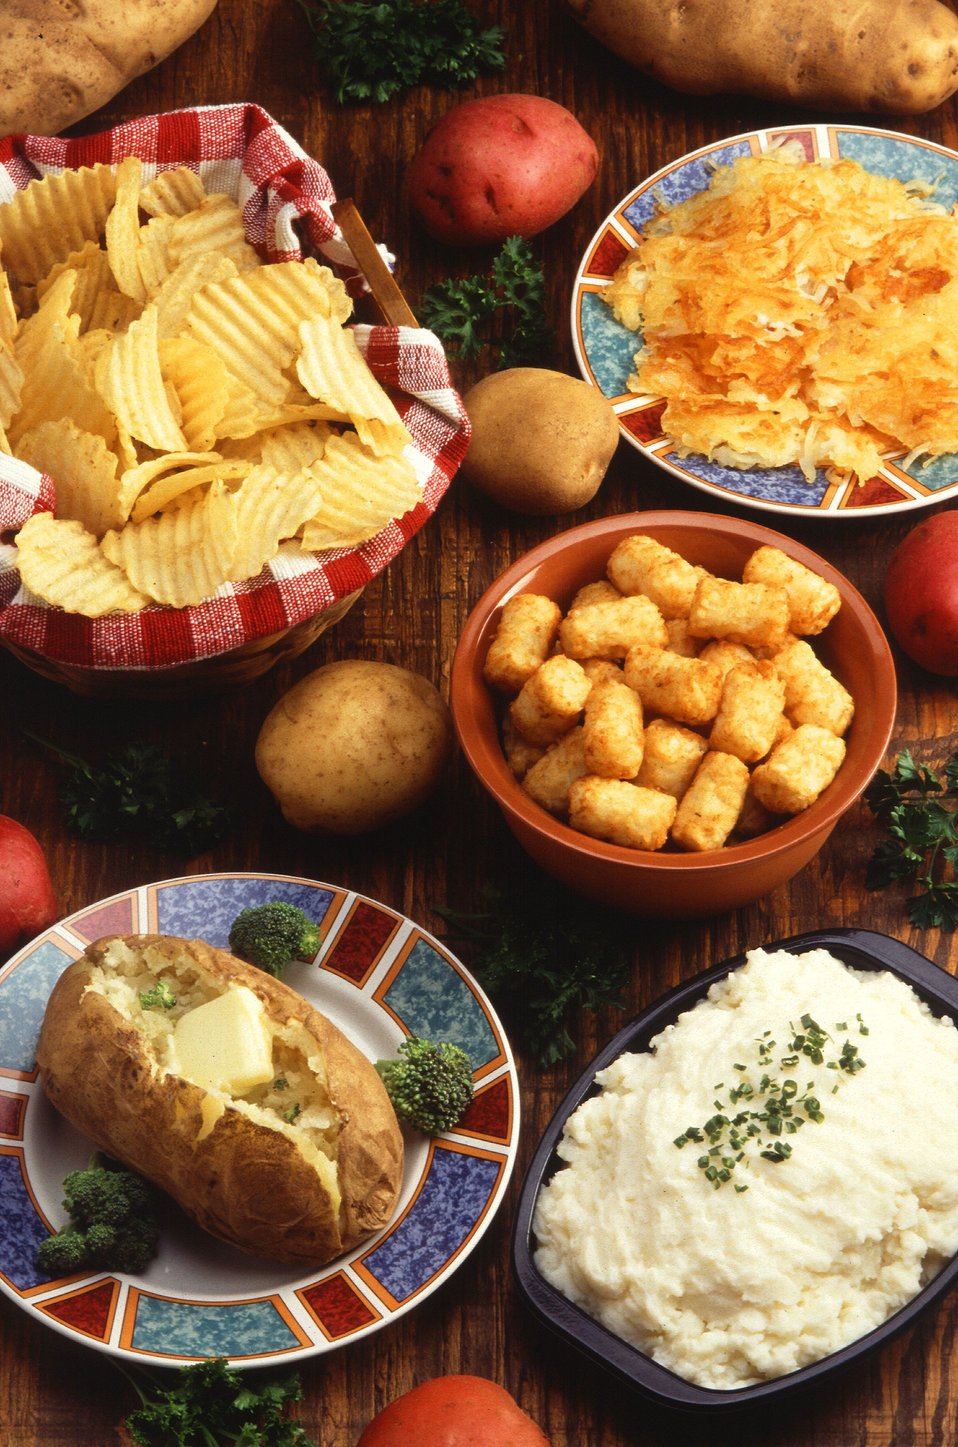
A collection of products made from potatoes on Sept. 26, 2012. Americans eat about 140 pounds of potatoes a year in fresh and processed forms. U.S. Department of Agriculture (USDA) Agricultural Research Service (ARS) researchers have brought forth a multitude of new improved potato varieties for both uses.